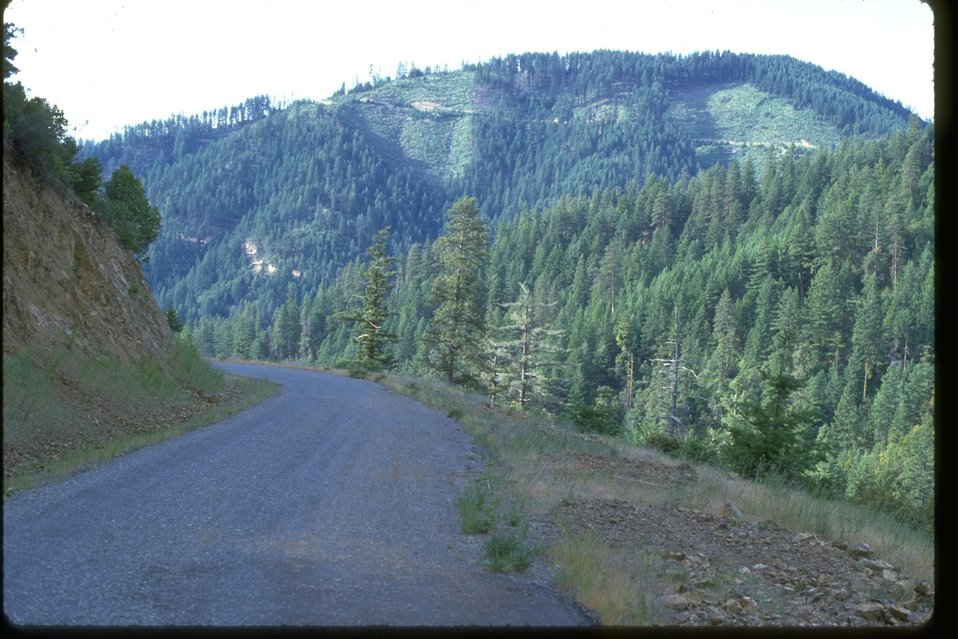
Clearcuts can be seen from a logging road.